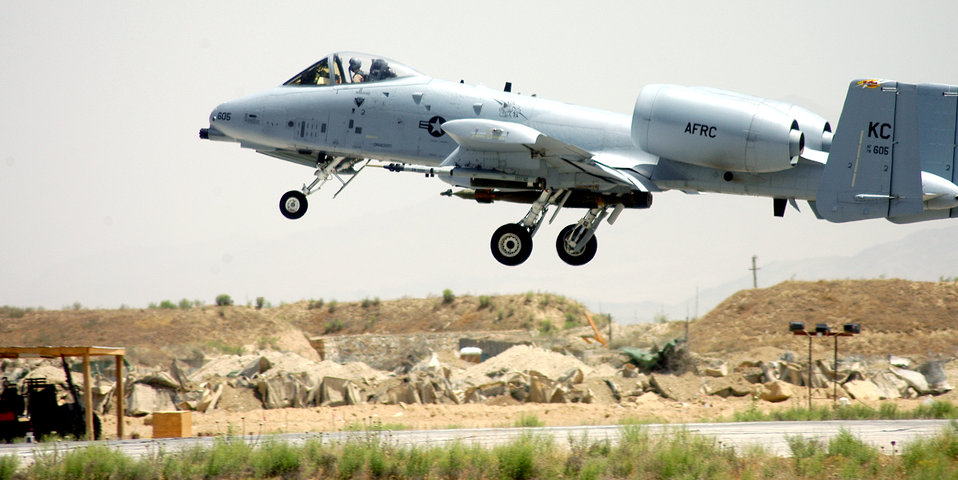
CENTAF airpower summary

The A-10 Thunderbolt II, like this one taking off for a mission from Bagram Air Base, Afghanistan, last year, is among the various U.S. Central Command Air Forces air assets available for providing close-air support for International Security Assistance Force troops in contact with enemy forces in that country. This A-10, deployed from the Air Force Reserve Command's 442nd Fighter Wing at Whiteman Air Force Base, Mo., also illustrates the integral role played by the total force in the war on terrorism.